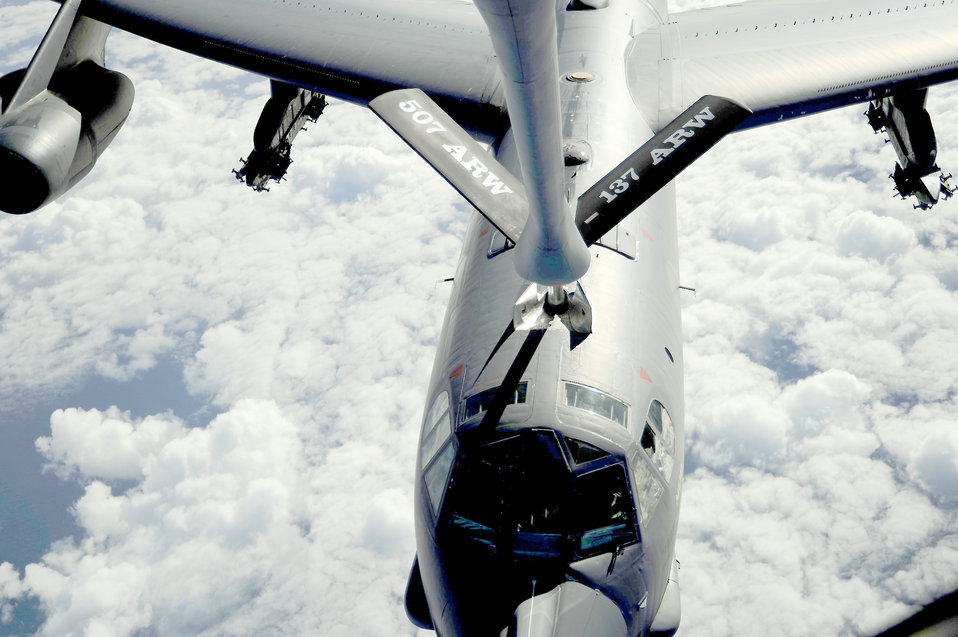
Rim of the Pacific exercise

A B-52 Stratofortress receives fuel from a KC-135 Stratotanker in support of exercise Rim of the Pacific July 10, 2010, over the Pacific Ocean. RIMPAC is a biennial, multinational exercise designed to strengthen regional partnerships and improve interoperability. The B-52 is from the 20th Bomb Squadron at Barksdale Air Force Base, La., and the KC-135 is assigned to the 465th Air Refueling Squadron at Tinker Air Force Base, Okla.